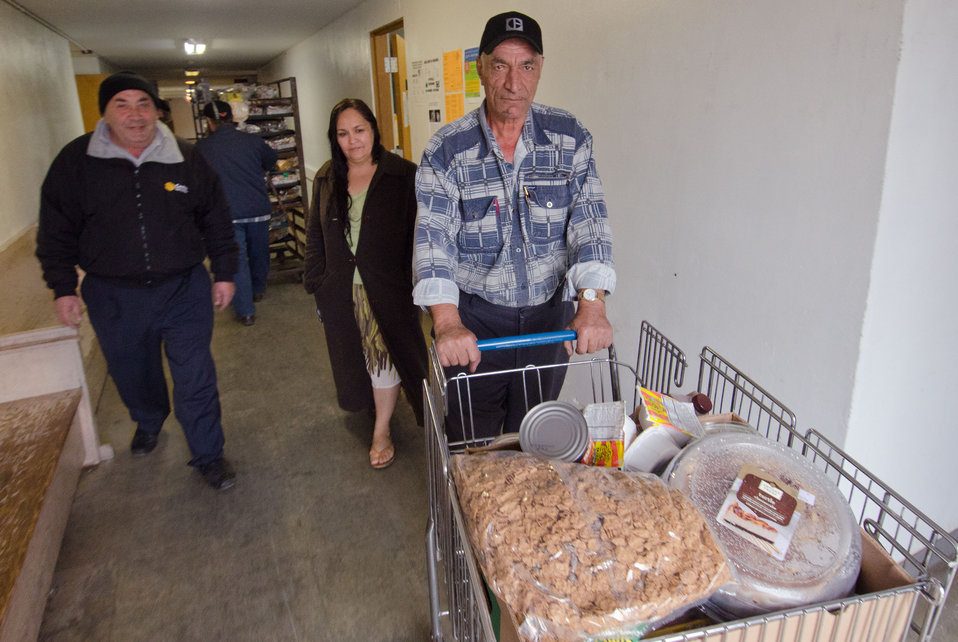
Mekhredze Telman (right) helps Amanda Arthur (center) with her cart of dry and canned goods at Tukwila Pantry, Tukwila. WA, on Thursday, October 20, 2011. The pantry provides monthly food bank services to individuals and families in cities of Tukwila, SeaTac, Burien and the Boulevard Park community. Congregate meal service is held each Tuesday at their location in the Riverton Park United Methodist Church. The church provides some funds, several large rooms, and outdoor operating space for the pantry’s food distribution, shipping container storage units, trailer, tents, shelters and refrigeration truck. The pantry's weekly Tuesday’s Table provides 150 hot meals to seniors, low-income families, homeless individuals and those in transition. Additionally, emergency referral services are provided to assist individuals connecting with agencies that can address their needs. Executive Director Joe Tice grew up in Tukwila and feels compelled to give back to economically challenged community of 25,000 families in 3,000 households. “Since the pantry’s founding in 2000, census figures show poverty has risen 300%,” said Joe Tice. “85-95% of elementary school children are enrolled in SNAP (U.S. Department of Agriculture Supplemental Nutrition Assistance Program).” At the pantry’s height, it delivered 3.8 million pounds of food (2009), but with the economic downturn Tice projects 2011 deliveries to total 2.6 million pounds. Tice, considers Tukwila Pantry as one of the smaller distribution points in the greater Seattle area. Some canned and dry goods are provided by
The Emergency Food Assistance Program (TEFAP) a Federal program that helps supplement the diets of low-income needy persons, including elderly people, by providing them with emergency food and nutrition assistance. A significant amount of the pantry’s food comes through Northwest Harvest, Washington's only nonprofit statewide food bank distributor; and Food Lifeline, the largest nonprofit food distributor in the state who solicit, receive, and distribute over 24 million meals of food to nearly 700,000 people through our network of 300 food banks (such as Tukwila Pantry), shelters and meal programs.